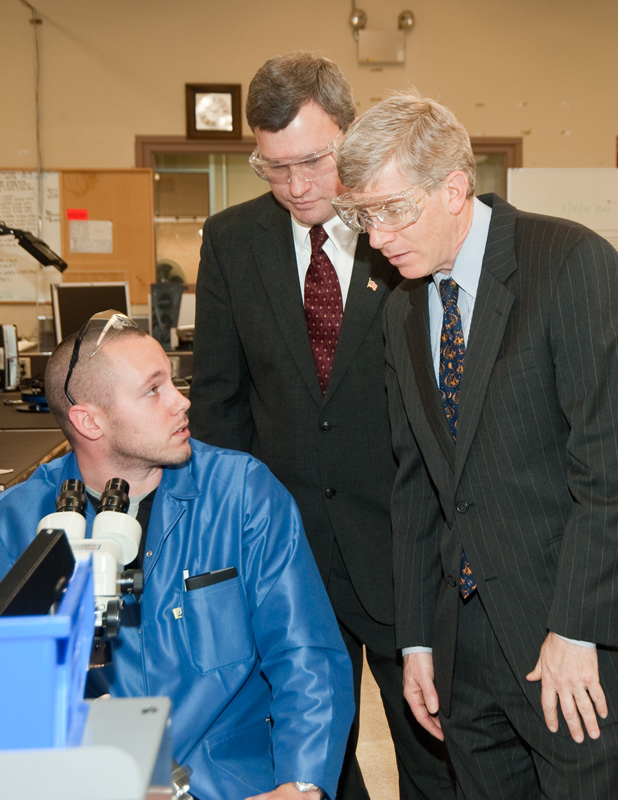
The Deputy Secretary and Administrator toured the Arming Fuzing & Firing (AF&F) and Stronglink Mechanisms areas at KCP.